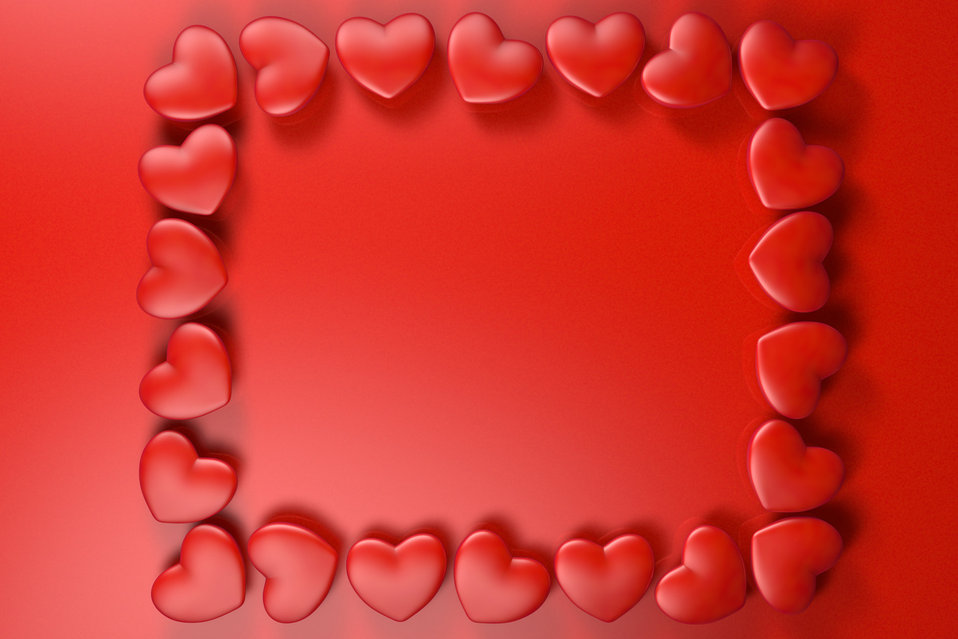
Frame from hearts

300dpi frame of hearts on a red background.